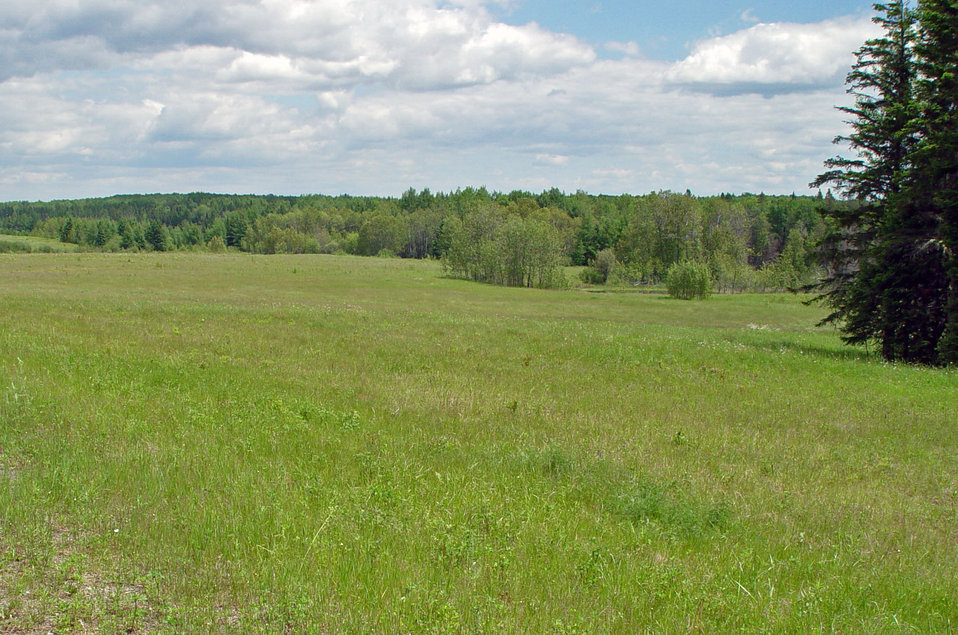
Field

Aroostook National Wildlife Refuge, ME.